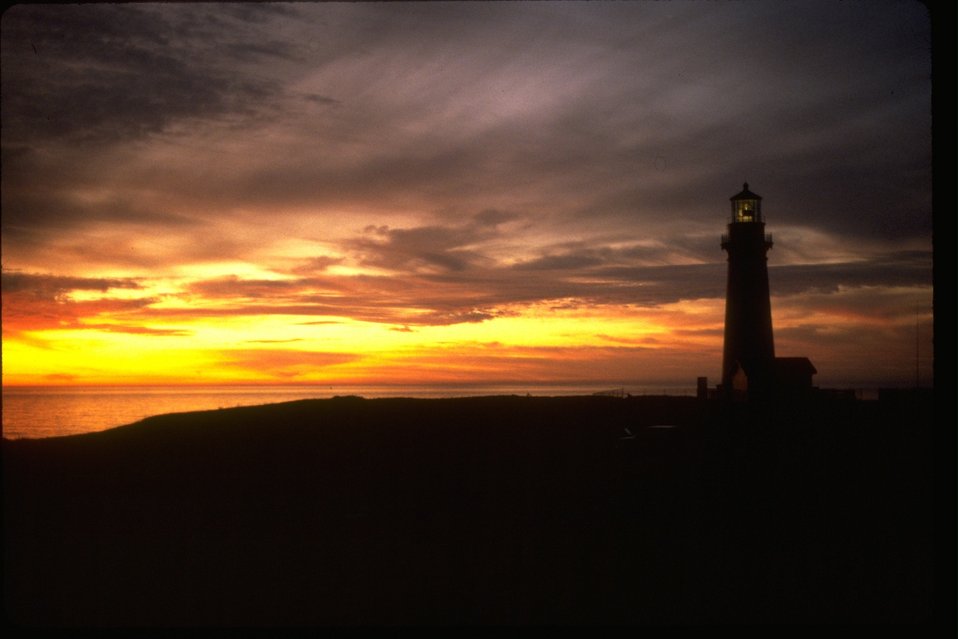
Sunset at the Yaquina Head lighthouse.